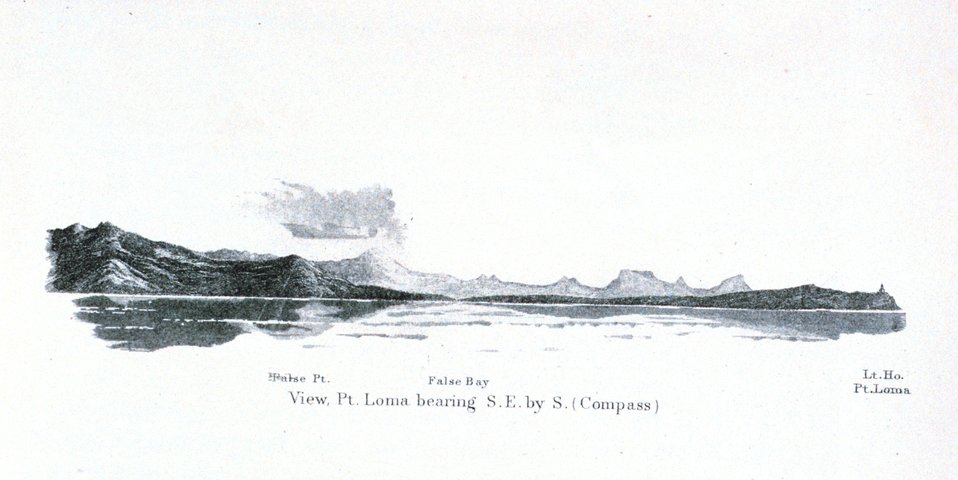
A view of Point Loma with the Point Loma lighthouse seen to the right. In: Pacific Coast. Coast Pilot of California, Oregon, and Washington Territory In: Pacific Coast. Coast Pilot of California, Oregon, and Washington Territory . By George Davidson, 1869. P. 22. Library Call Number VK947.D4 1869.